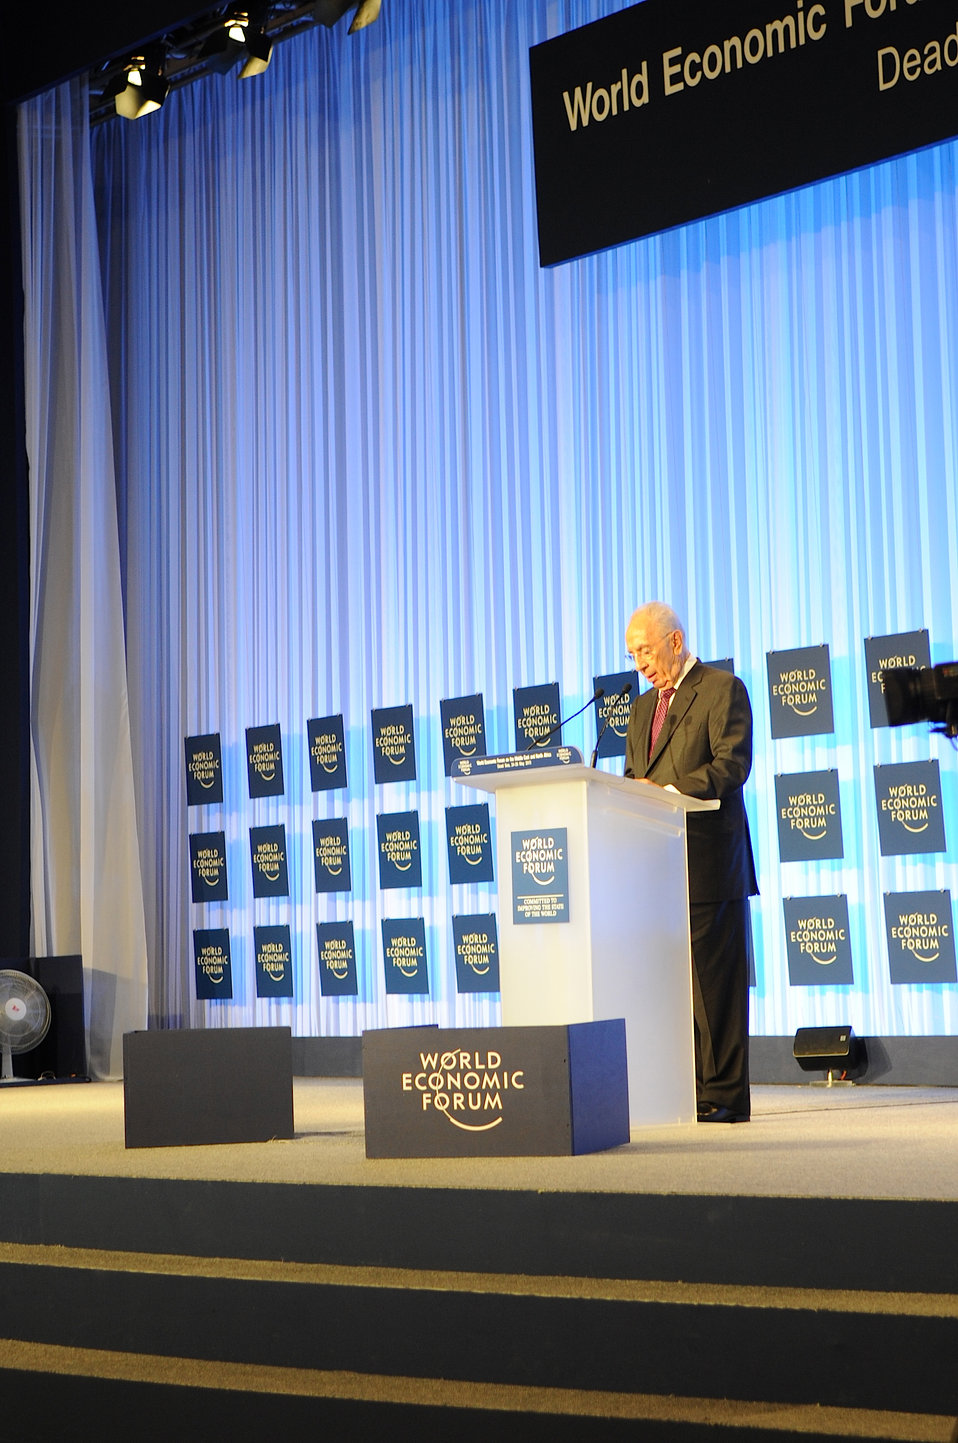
Israeli President Peres Addresses the World Economic Forum

Israeli President Shimon Peres addresses the closing plenary session of the World Economic Forum meeting, attended by U.S. Secretary of State John Kerry, in Dead Sea, Jordan, on May 26, 2013.